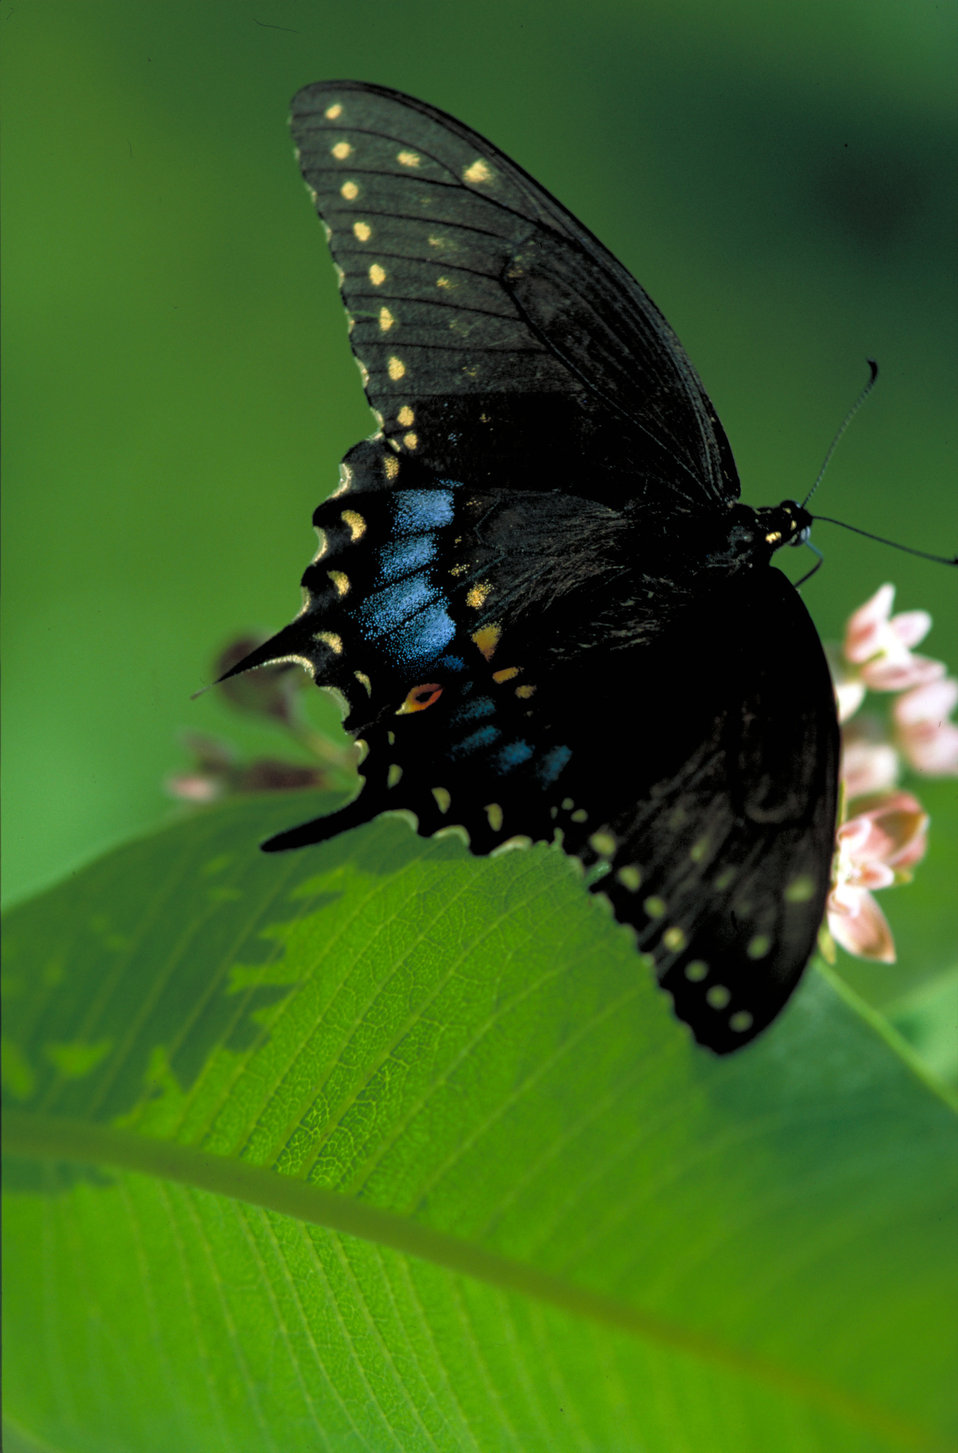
A black swallowtail butterfly

Also called Spicebush swallowtail, a black butterfly with small blue and yellow spots sitting on a wild bergamot blossom with wings open, viewed from above.